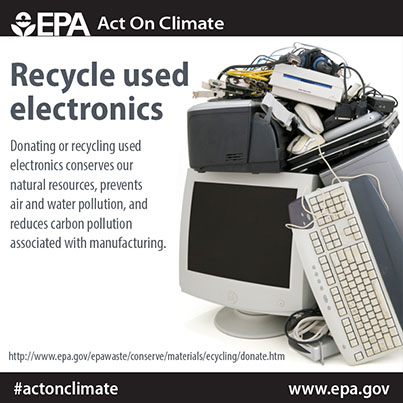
Recycle used electronics

Electronic products are made from valuable resources and materials, including metals, plastics, and glass, all of which require energy to mine and manufacture. Donating or recycling used electronics conserves our natural resources, prevents air and water pollution, and reduces carbon pollution associated with manufacturing.
Manufacturers and retailers offer several options to donate or recycle electronics. You can search below to find programs developed by Sustainable Materials Management (SMM) Electronics Challenge participants.